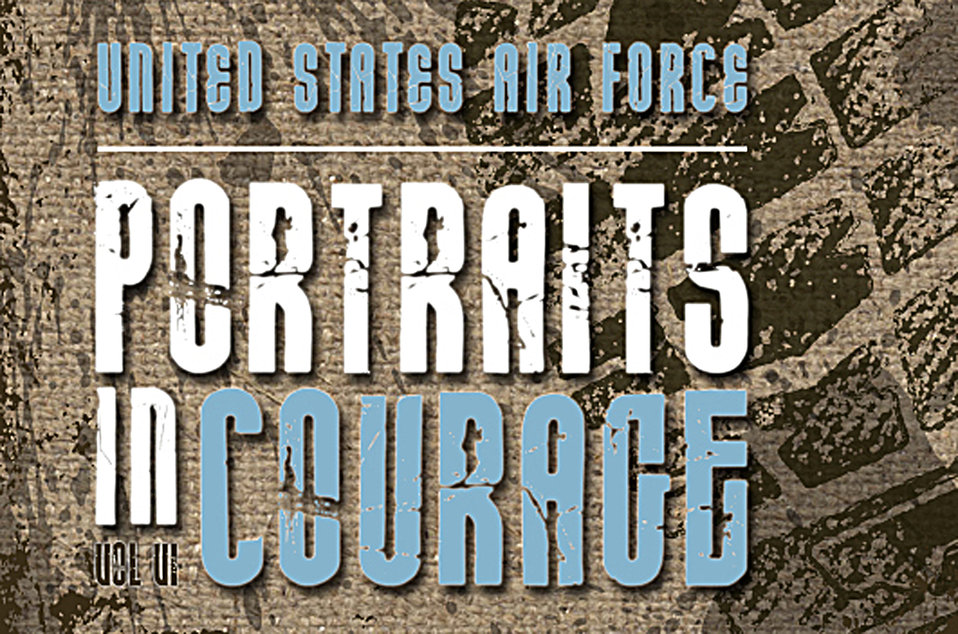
Portraits in Courage